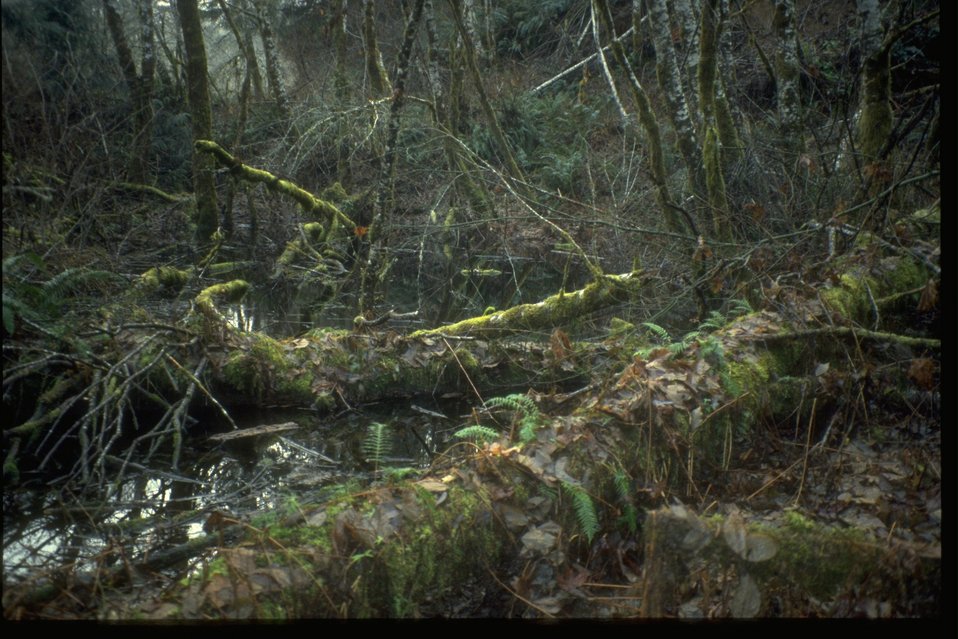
Large wood debris riparian area in western Oregon.